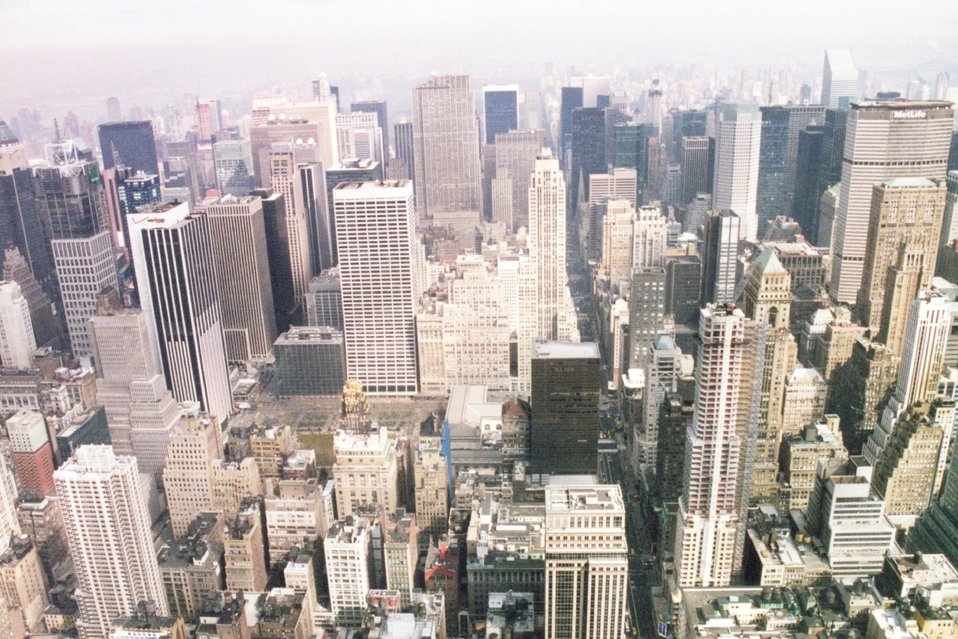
New York skyline from above.